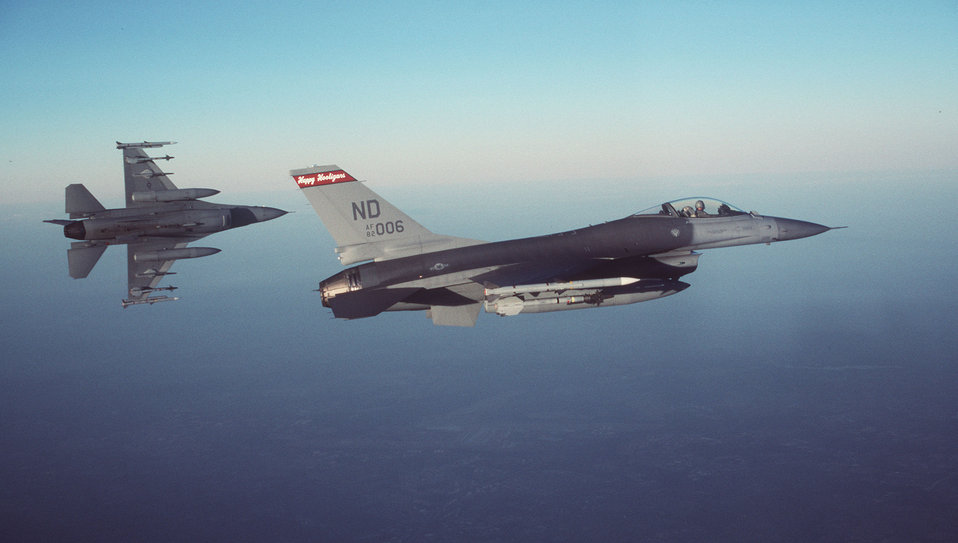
Early mission

OPERATION NOBLE EAGLE --Two F-16A Fighting Falcons, from the North Dakota Air National Guard’s 178th Fighter Squadron fly in formation during an early morning combat air patrol mission over the East Coast in support of Operation Noble Eagle.